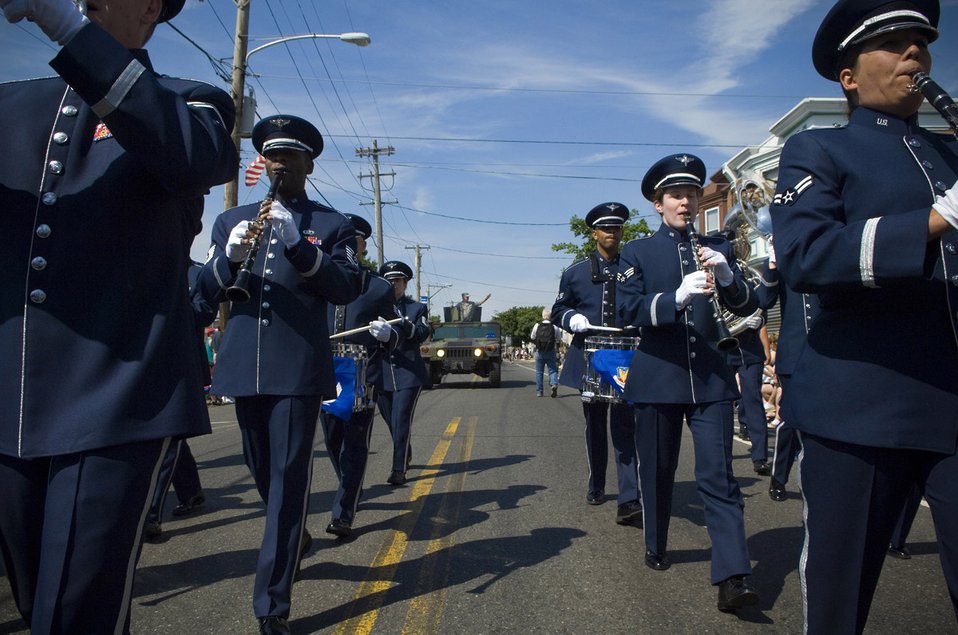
Philly Air Force Week

Airmen from the U.S. Air Force Heritage of America Band play the